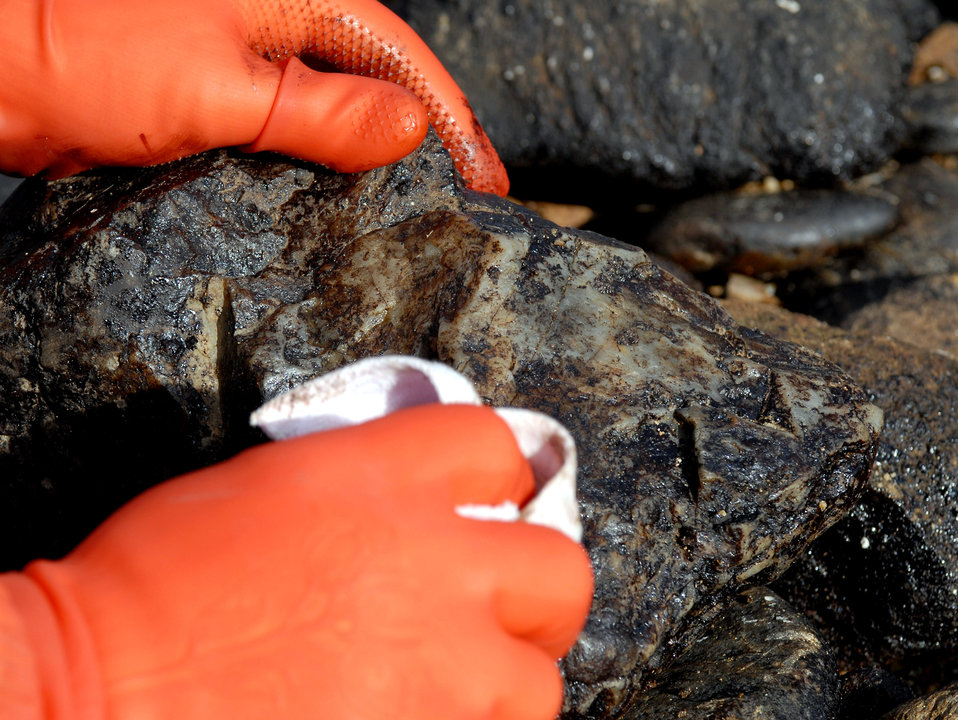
Airman, Soldiers aid local beach in oil spill clean-up

An Airman from Kunsan Air Base cleans a rock after a crude oil spill from a crane barge washed on shore Dec.7 in South Korea. Over 200,000 volunteers assisted with the clean up of 2.7 million gallons of oil.